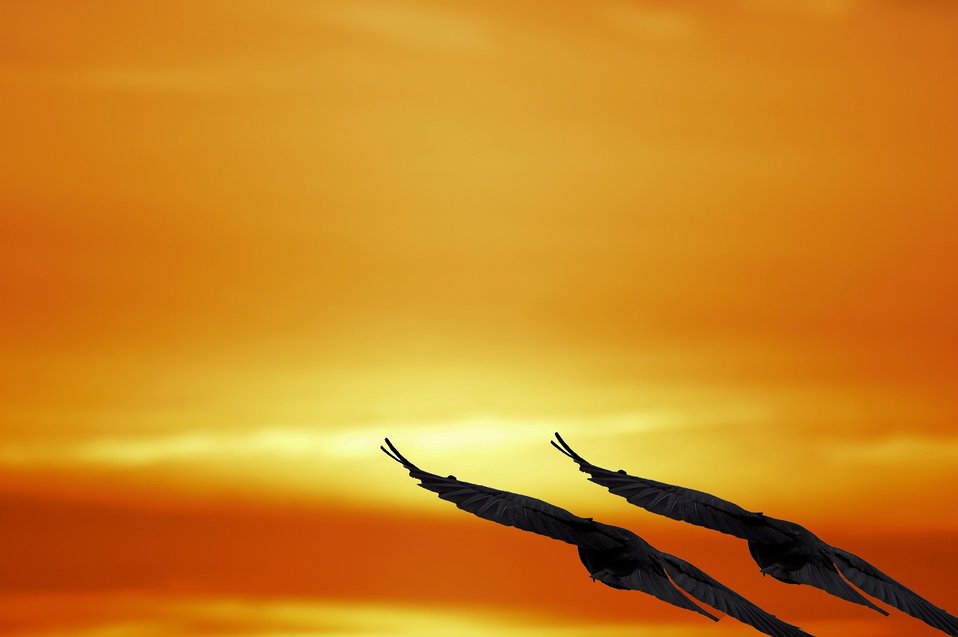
Flying birds in a red sky.